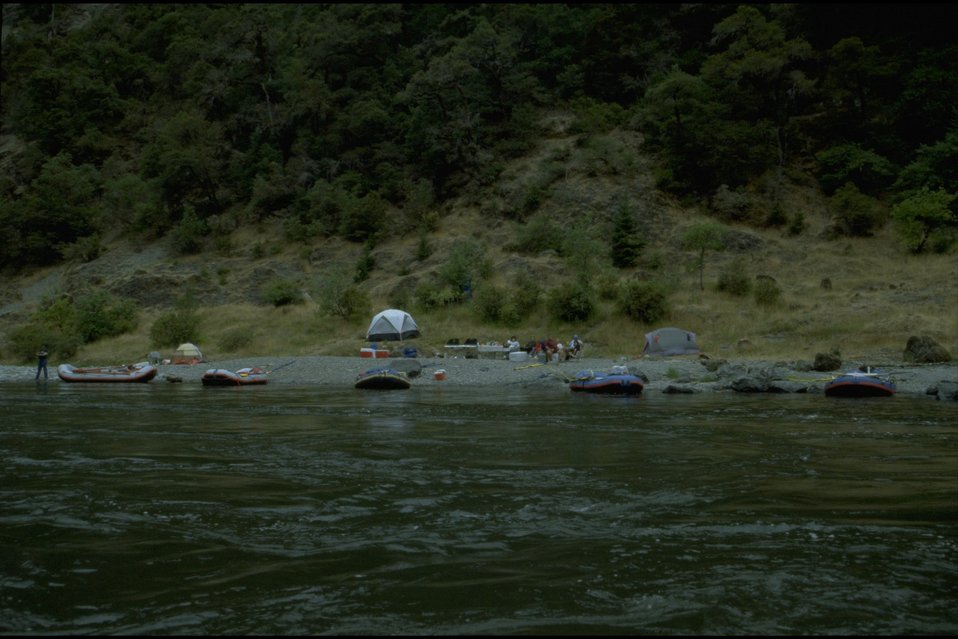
Rogue River - Wild section. River Camp.